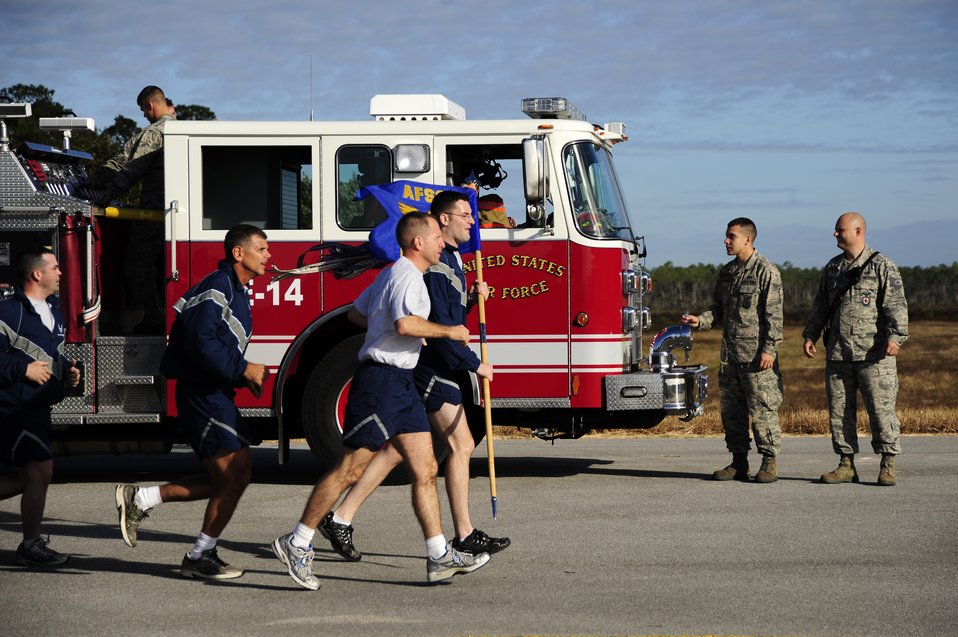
1 SOW Wing Run

U.S. Air Force Col. James Slife, commander of 1st Special Operations Wing, runs with fellow airmen during a 5 km run, Hurlburt Field, Fla., Nov. 7, 2011. The commander leads his airmen in an effort to promote unity among the squadrons that make up the 1st SOW.